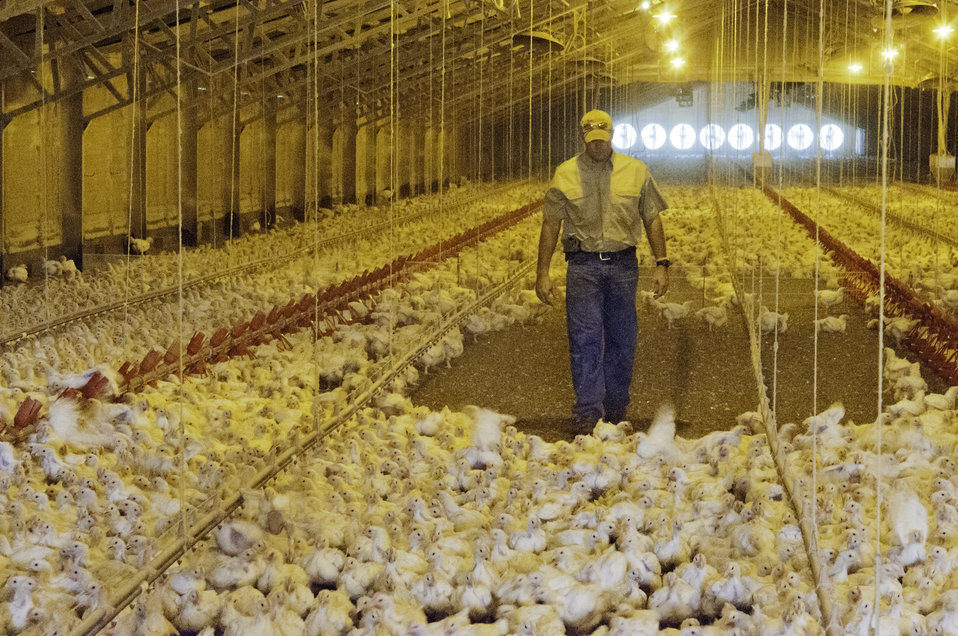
Bobby Morgan checks on broiler hens in one of his chicken houses in Luling, TX on Aug. 23, 2013.